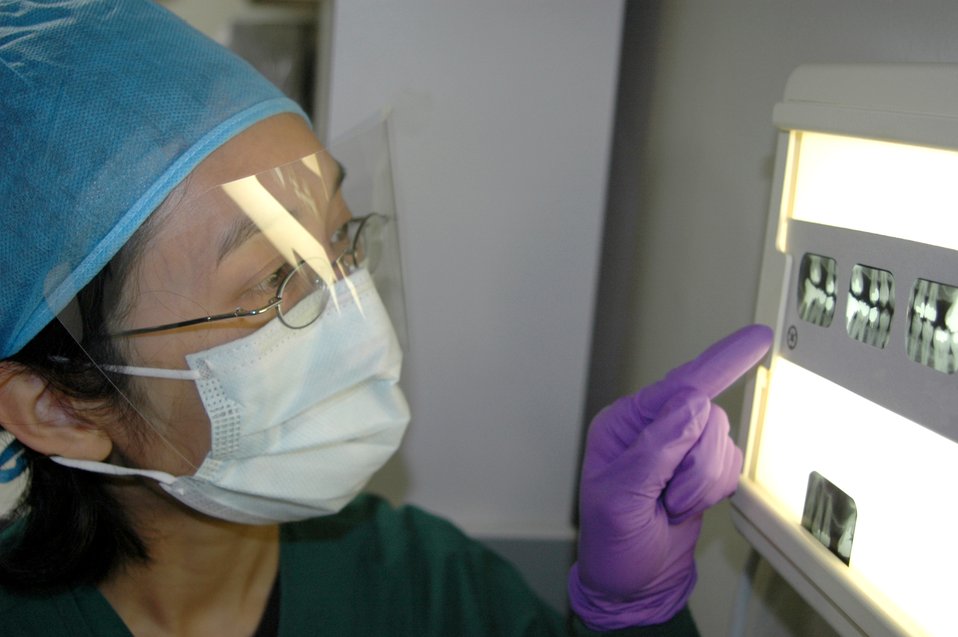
Dental health

Major (Dr.) Elizabeth Kutner reviews a patient's X-rays at Anderson Air Force Base, Guam. Doctor Kutner is a general dentist with 36th Medical Group dental clinic